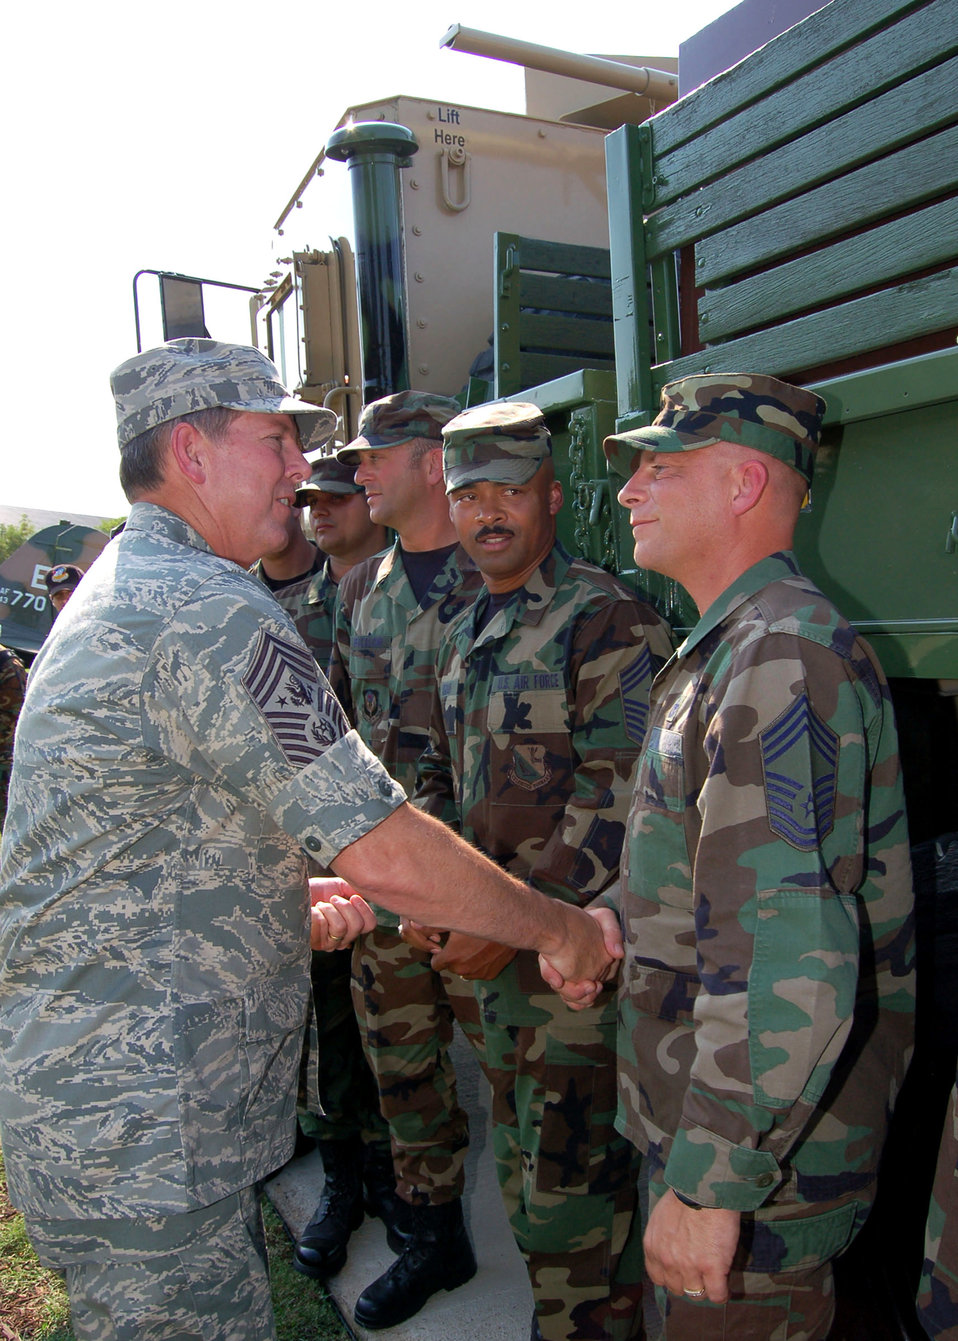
Dedication recognizes Airmen who deliver under fire

Chief Master Sgt. of the Air Force Rodney J. McKinley coins Chief Master Sgt. Tony Killion, Air Force careerfield manager for vehicle operations at the Pentagon, following the ceremony July 23 to dedicate an Air Force gun truck to the Air Force Enlisted Heritage Hall at Maxwell Air Force Base's Gunter Annex, Ala. The truck was decommissioned after an Improvised Explosive Device (IED) attack in Iraq that made the vehicle inoperable. Both chiefs are currently attending the Senior Enlisted Leader Summit. Chief Killion was recognized for prior convoy duty in Iraq.